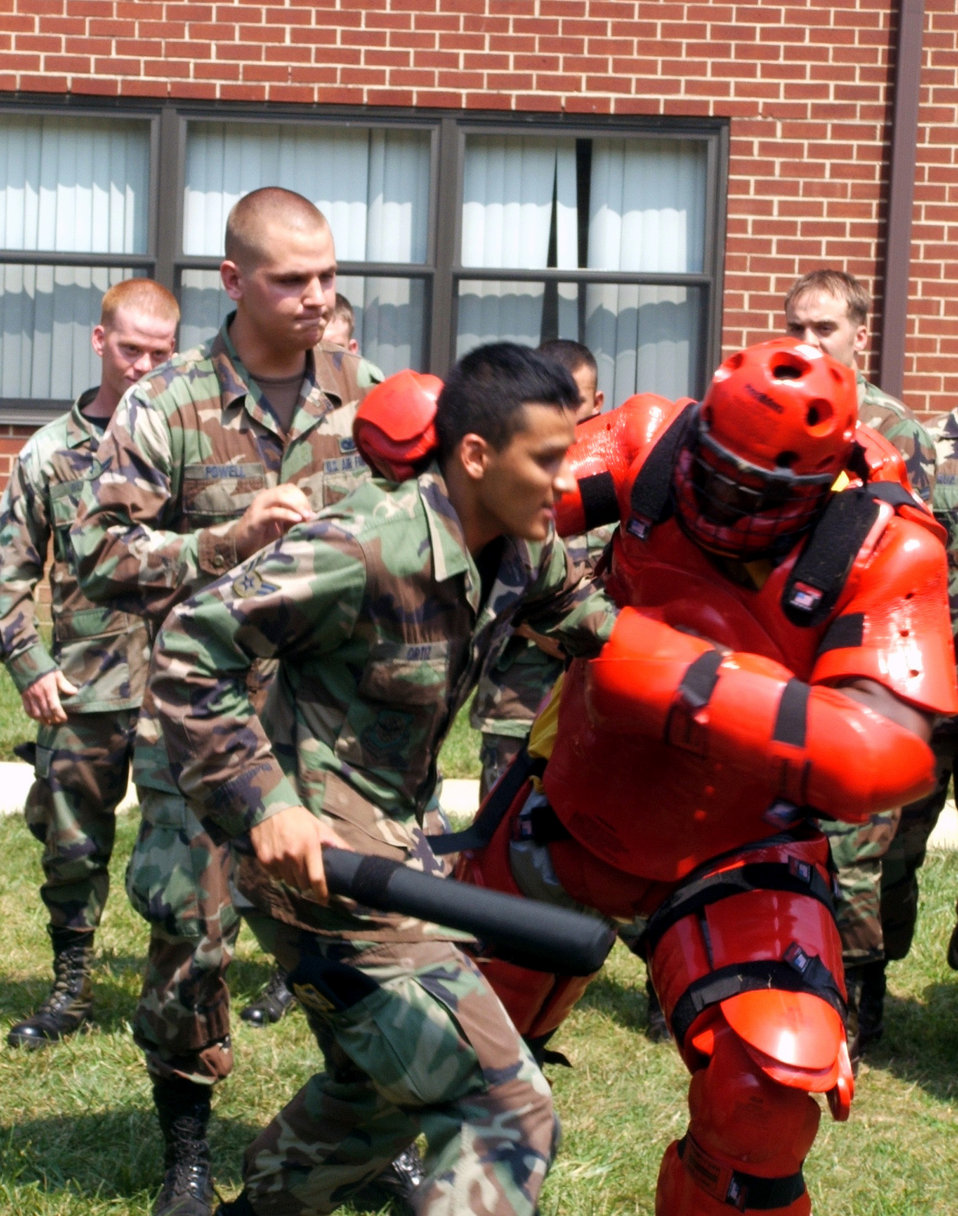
Phoenix Raven

Airman 1st Class Guillermo Ortiz and Airman Coleman Powell participate in a training scenario with an aggressor in a